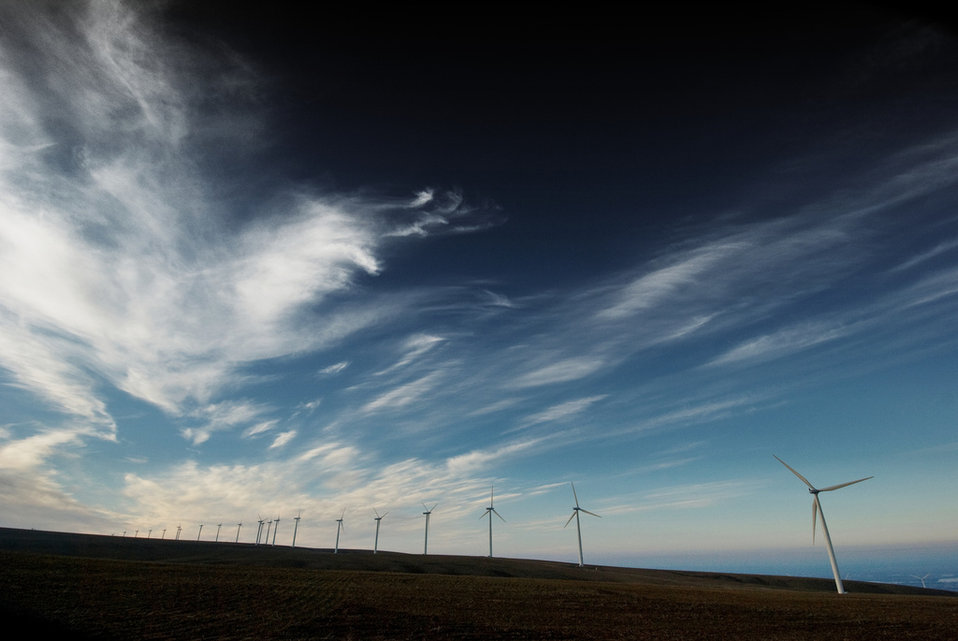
Wind turbines are just one source of energy for the Pacific Northwest.